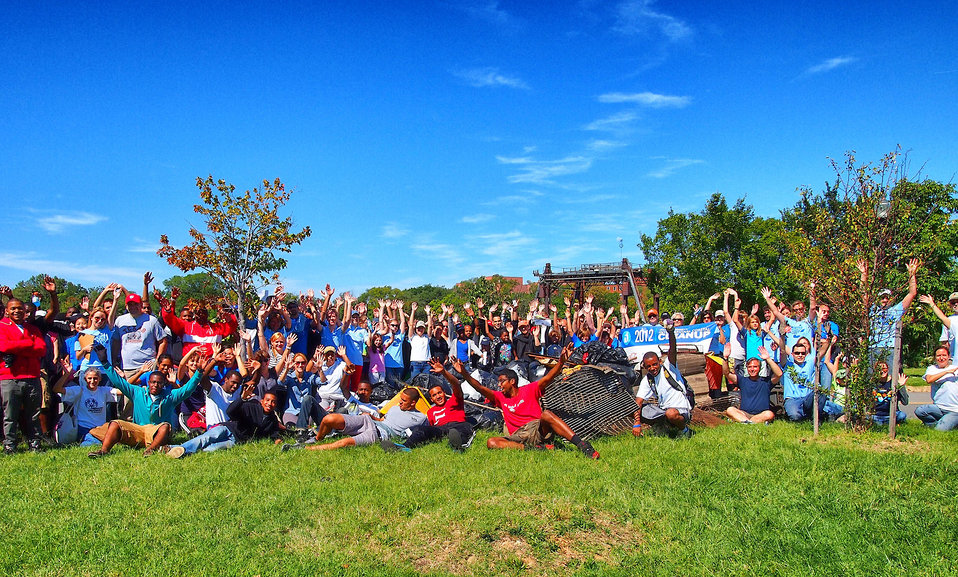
September 15, 2012 Volunteers at Anacostia River cleanup in Washington, D.C.

Dozens of volunteers joined a cleanup of the Anacostia River in Washington, D.C. as part of International Coastal Cleanup Day, celebrated on September 15, 2012.

Ocean Conservancy, with help from EPA and other sponsors, hosted the International Coastal Cleanup. The ICC is an annual event that includes over 100 countries and territories bordering every major body of water on Earth.

More information on the International Coastal Cleanup